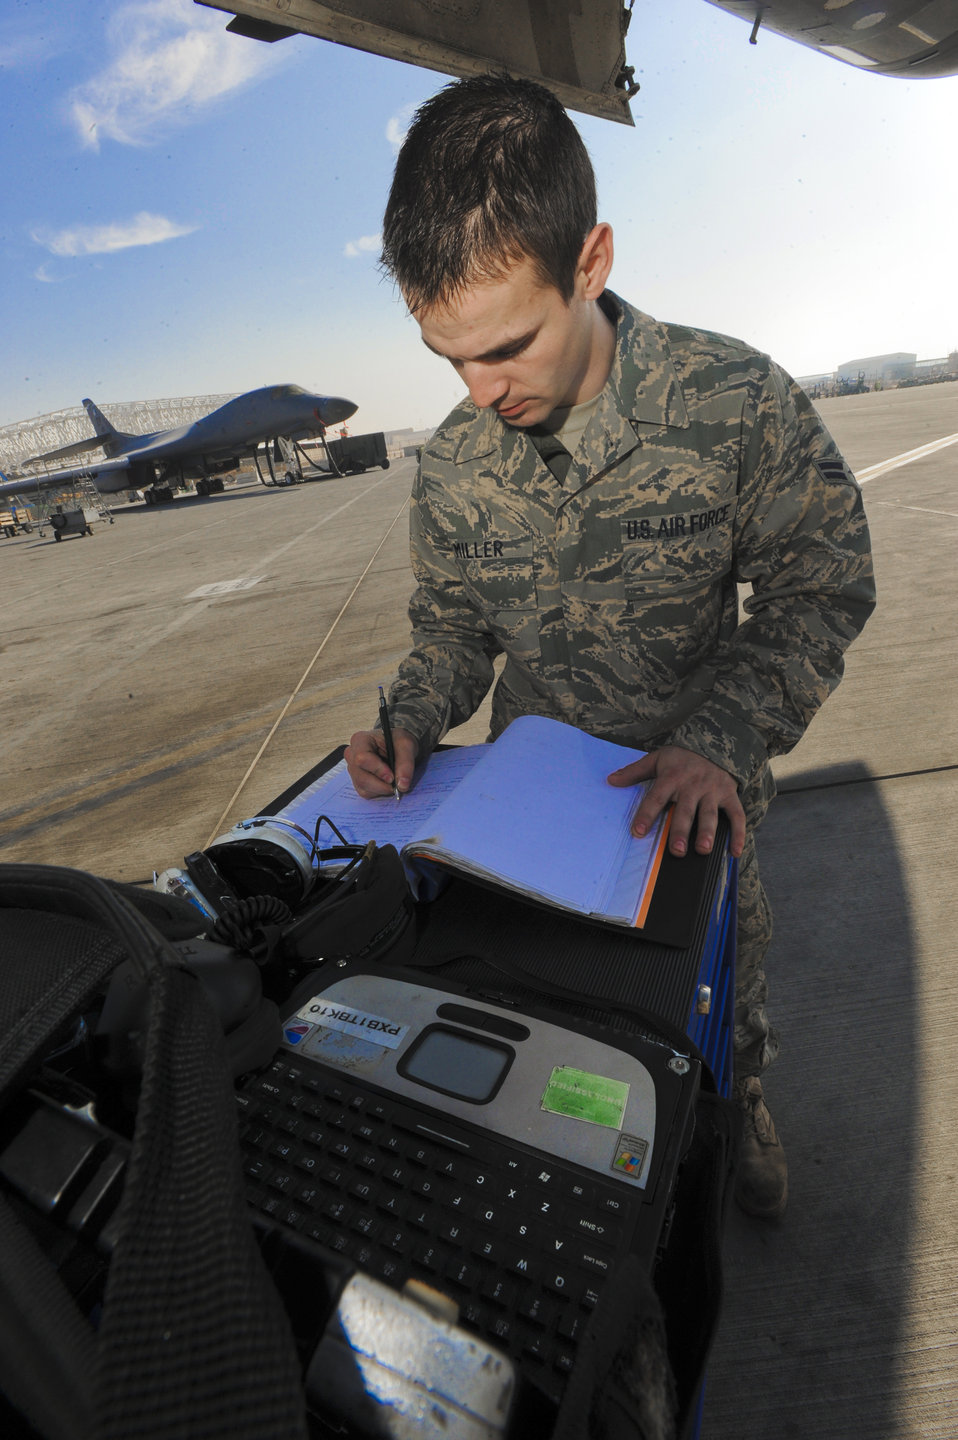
Airmen keep B-1B ready for bombs on target

Airman 1st Class Ancel Miller fills out maintenance paperwork after completing work on a B-1B Lancer Jan. 29 at an air base in Southwest Asia. Airman Miller is an electrical and environmental technician for the 7th Aircraft Maintenance Unit deployed from Dyess Air Force Base, Texas. He hails from Orange, Texas.